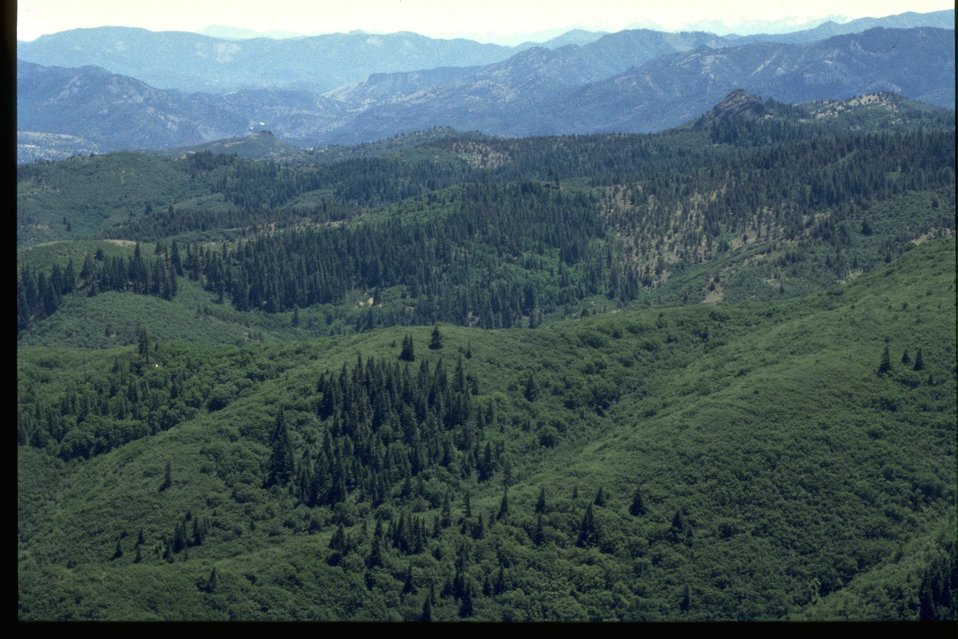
View of forest area.